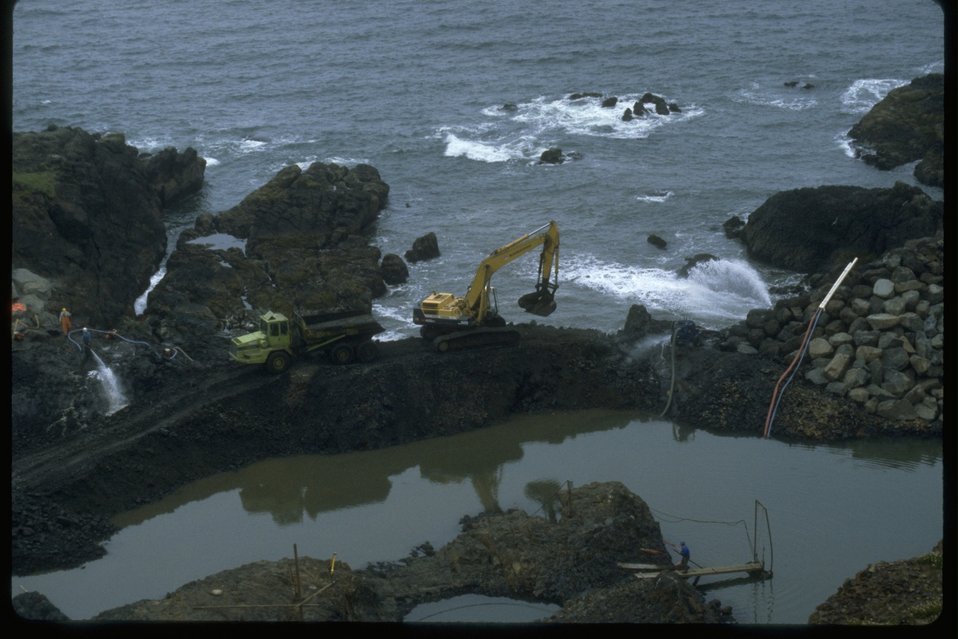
Breaching the Sea Wall and loading a truck during the construction at Quarry Cove.